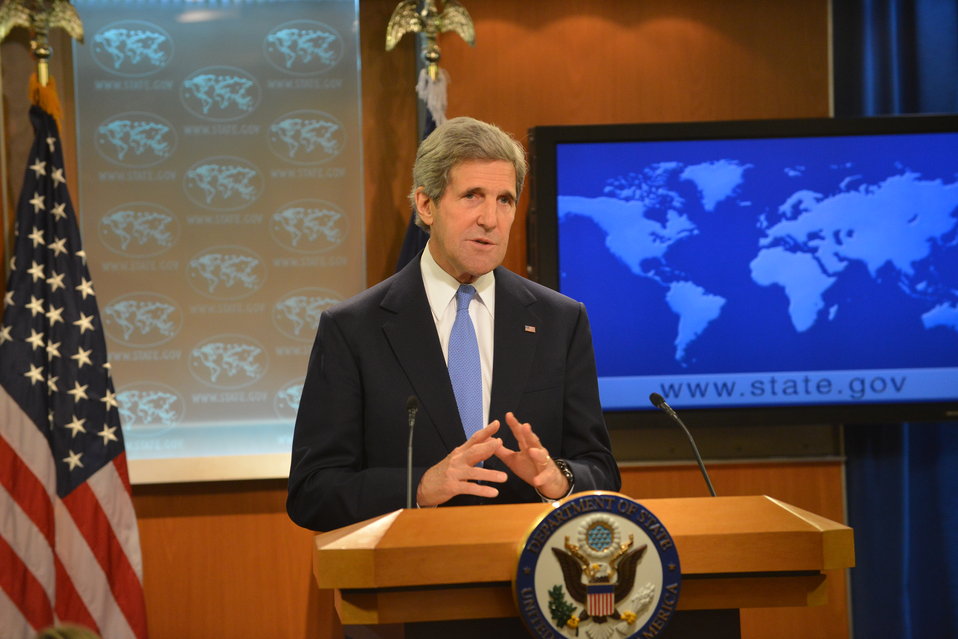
Secretary Kerry Releases the 2012 International Religious Freedom Report

U.S. Secretary of State John Kerry releases the 2012 International Religious Freedom Report at the U.S. Department of State in Washington, D.C., on May 20, 2013.